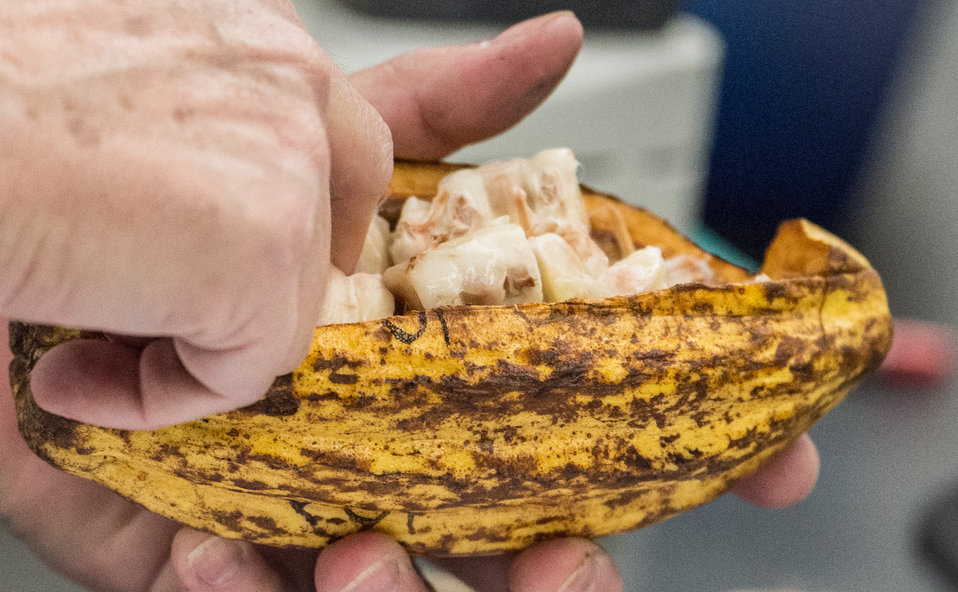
U.S. Department of Agriculture (USDA), Agriculture Research Service (ARS), National Center for Genetic Resources Preservation (NCGRP), Plant Germplasm Preservation Research Unit (PGPRU), Plant Physiologist Jennifer Crane retrieves seeds from the fruit of a cacao tree, this is part of the biophysics seed quality work being done, in Ft. Collins, CO, on Wednesday, Nov. 6, 2013.